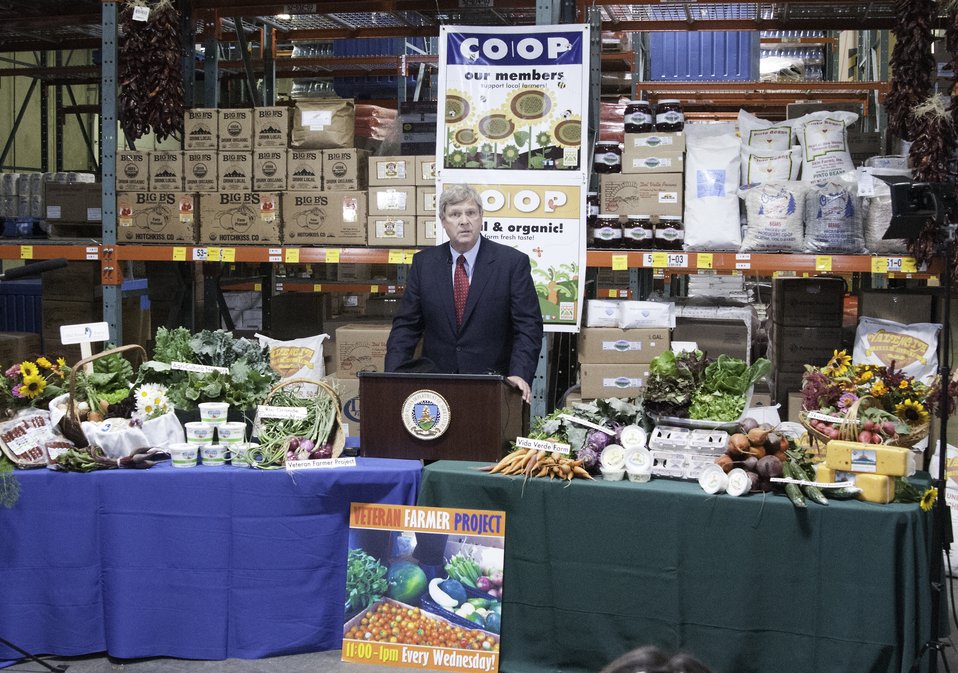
Agriculture Secretary Tom Vilsack meets with New Mexico producers and community stakeholders to highlight the U.S. Department of Agriculture’s (USDA) StrikeForce Initiative opportunities and the importance of comprehensive immigration reform in Albuquerque, NM on Thursday, Jun. 20, 2013.